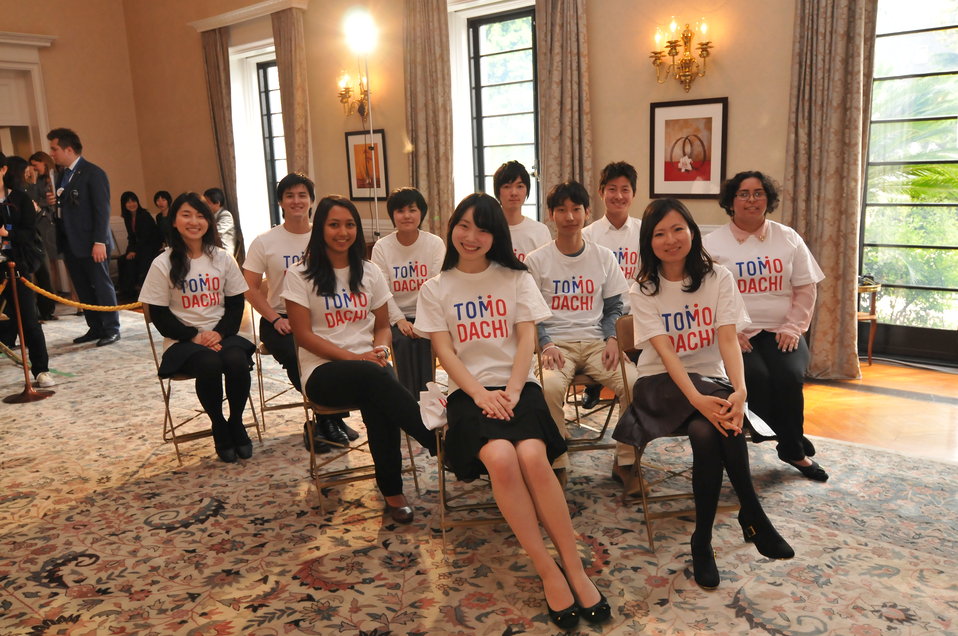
TOMODACHI Initiative Youth Engagement Program Participants Await Secretary Kerry's Arrival

Members of the TOMODACHI Generation pose at an event at the U.S. Ambassador’s residence while awaiting the arrival of U.S. Secretary of State John Kerry in Tokyo, Japan, on April 14, 2013.